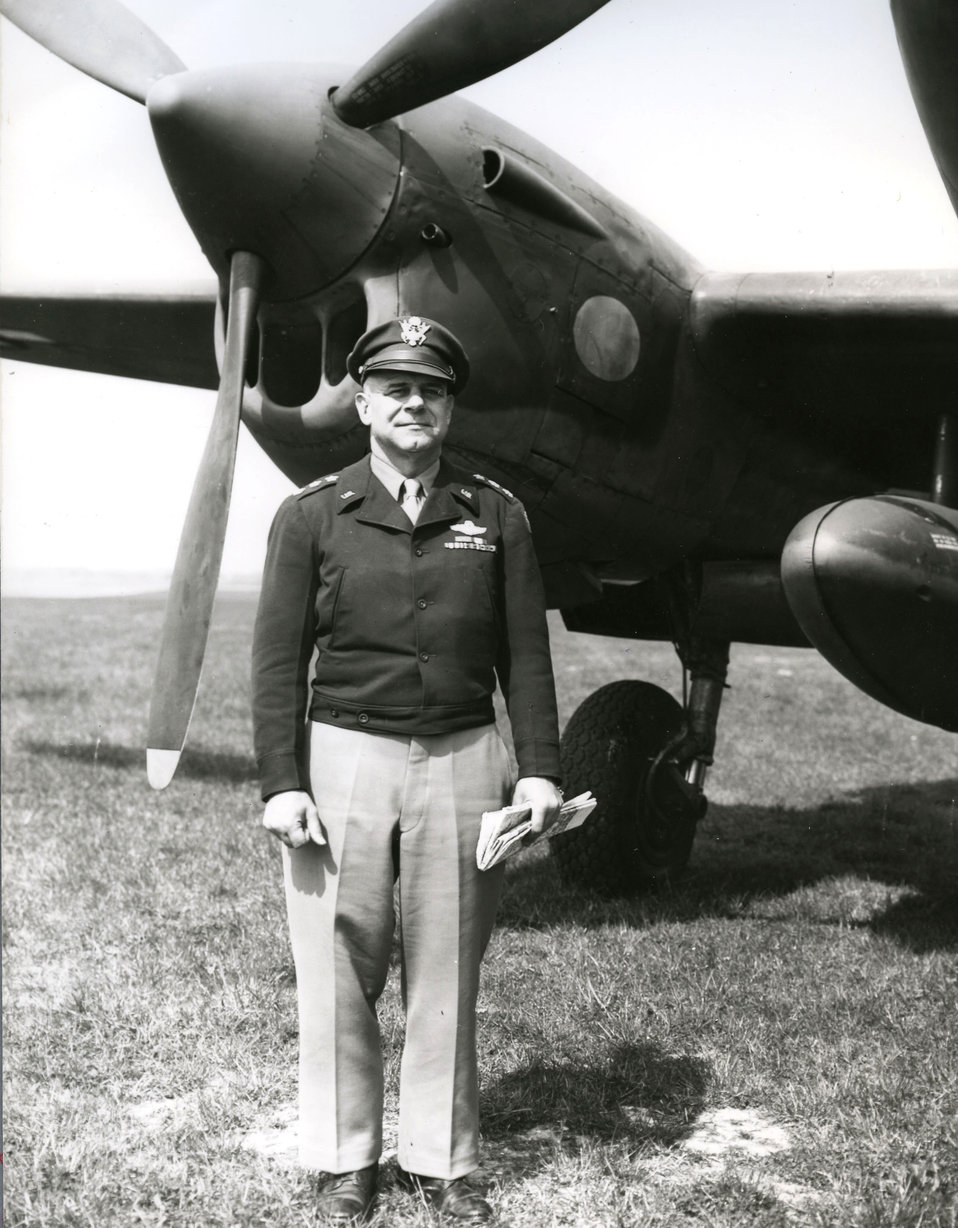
Lt. Gen. James H. Doolittle stands in front of a P-38 Lightning.